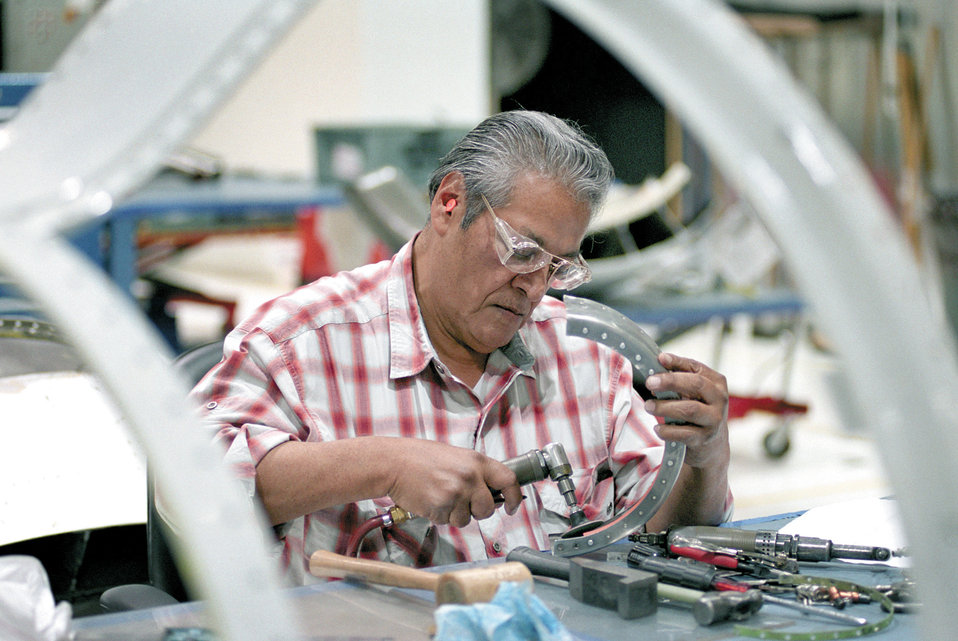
Employee celebrates half century of service

TINKER AIR FORCE BASE, Okla. -- In 1950, Steve Espinoza became a member of the Air Force family. More than 50 years later, he still serves the Air Force as a sheet-metal mechanic for the Oklahoma City Air Logistics Center here.